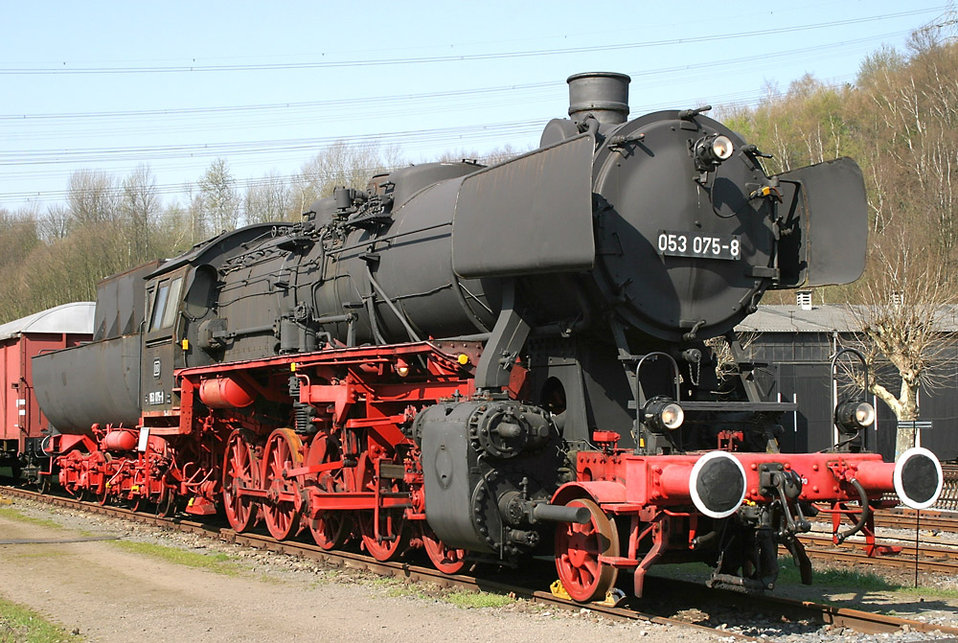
Deutsch: Dampflok der Baureihe 50